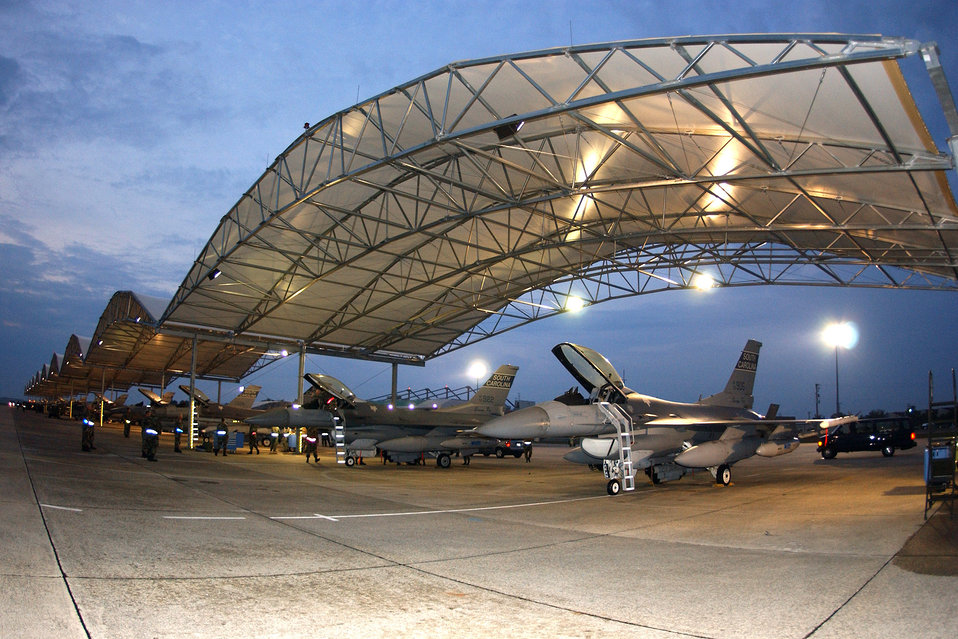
Bring on the inspectors

Crew chiefs ready their F-16 Fighting Falcons Sept. 12 for a mission. The Airmen, assigned to the South Carolina Air National Guard's 169th Fighter Wing at McEntire Joint National Guard Base, were preparing for an upcoming operational readiness exercise.